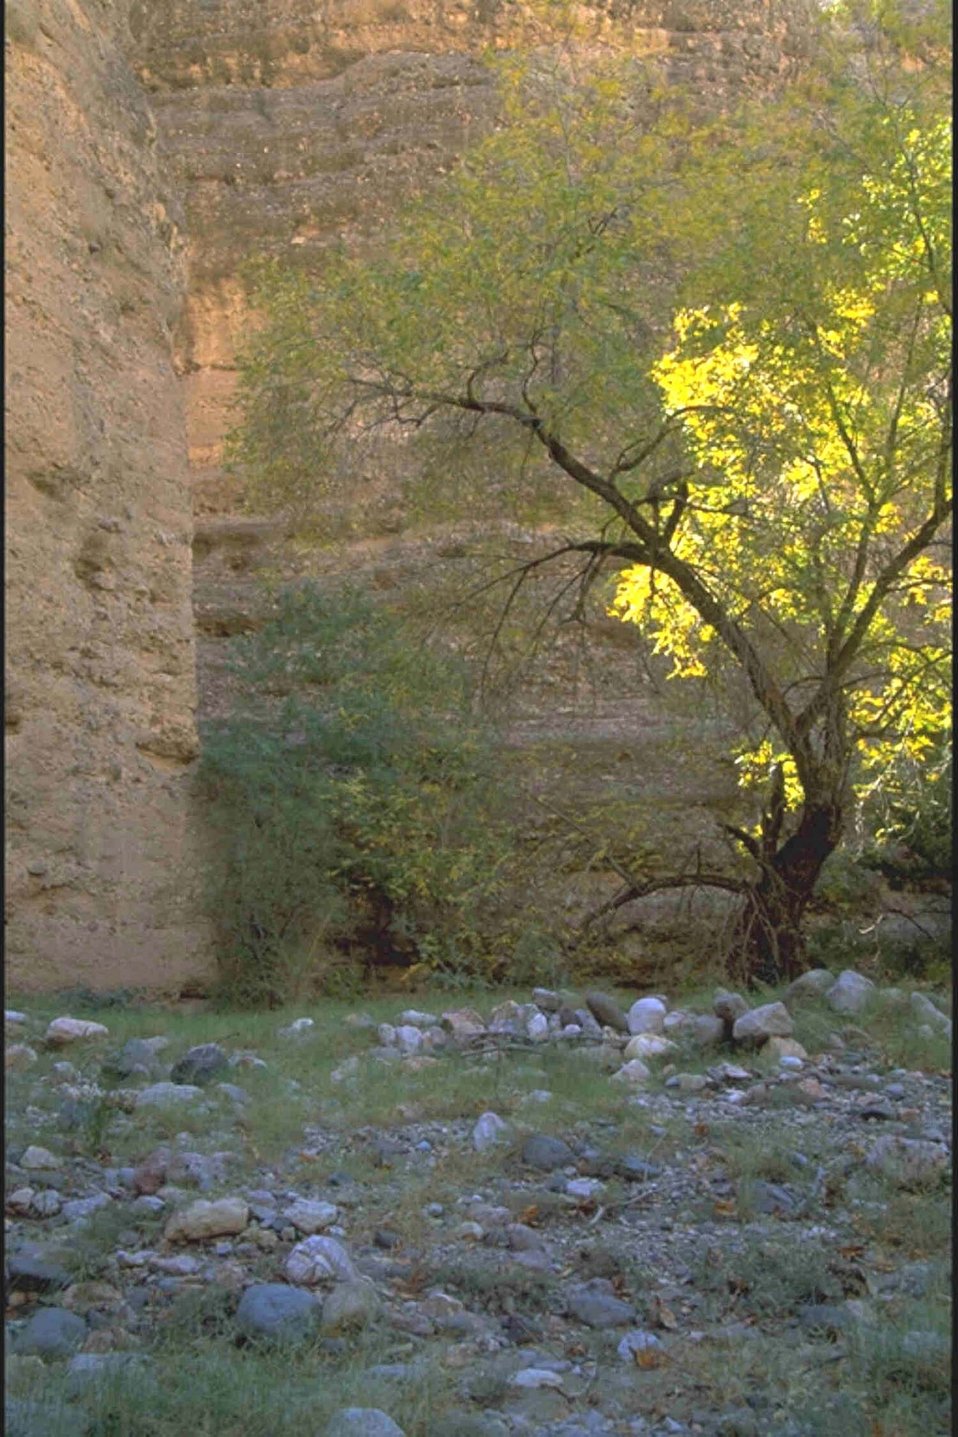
Walnut Trees in Old Deer Creek take a turn to gold.